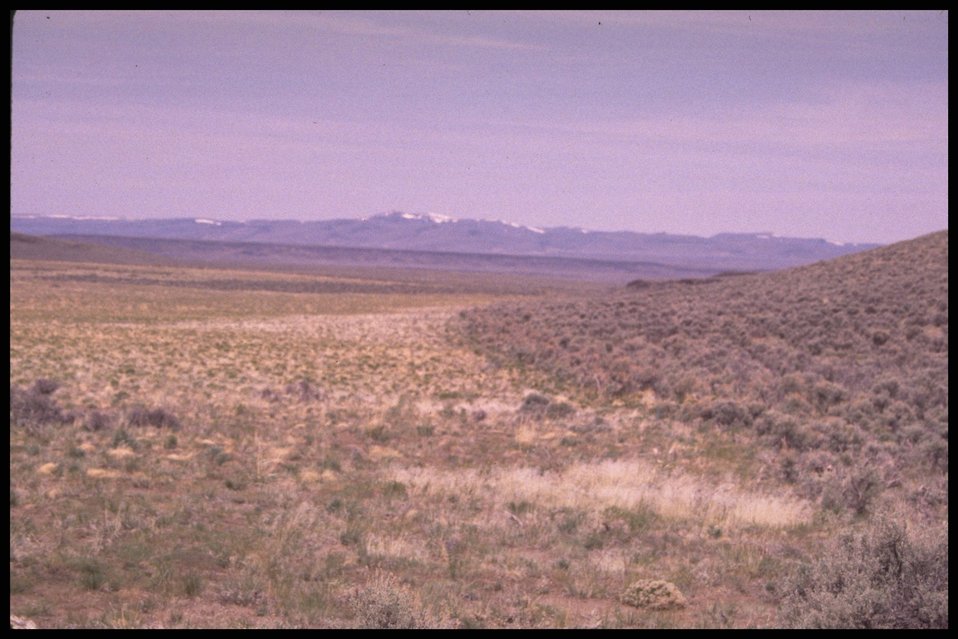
Scenic view of Desert, Lakeview District.